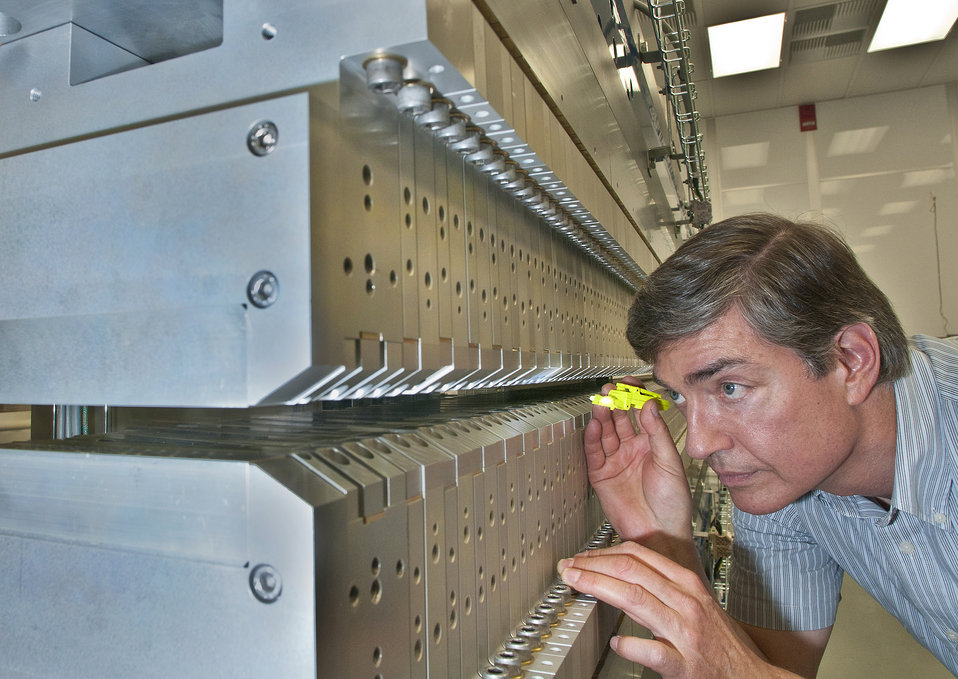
A mechanical technician from the accelerator systems division, inspects a recently delivered damping wiggler bound for installation at the National Synchrotron Light Source II at BNL.

The wiggler makes the electron beam more uniform and straight, producing brighter emissions.